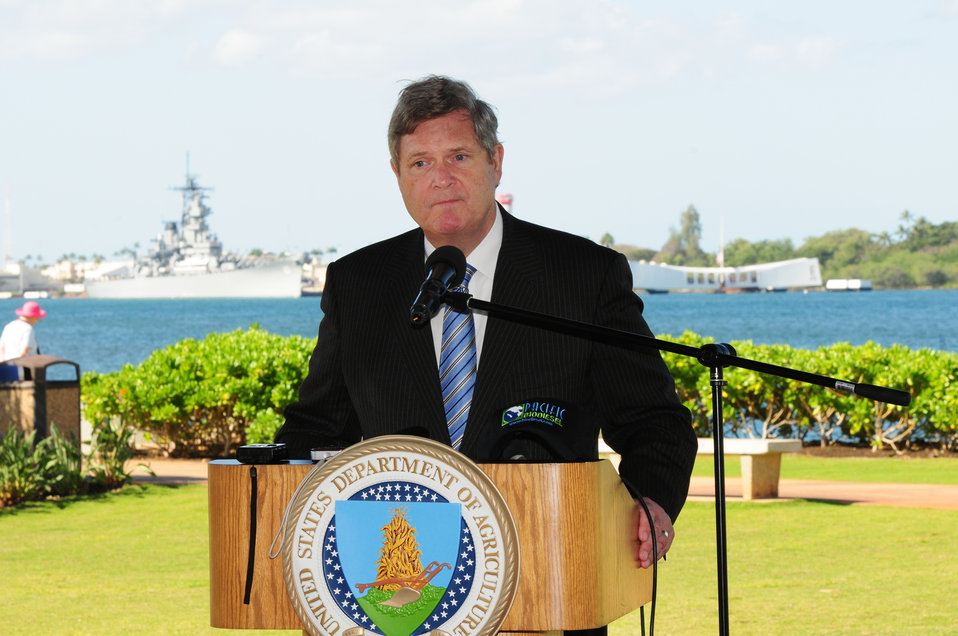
Agriculture Secretary Tom Vilsack highlights the Obama Administration's commitment to renewable energy at the.World War II Valor in the Pacific National Monument's Pearl Harbor Visitor Center. Pearl Harbor naval base was the first Hawaii military marine fleet to use biodiesel, replacing the Department of Navy-operated tour boats that shuttled visitors to and from the USS Arizona Memorial with five new boats capable of running on 100% biodiesel. Near Honolulu, HI, on Tuesday, January 10, 2012.